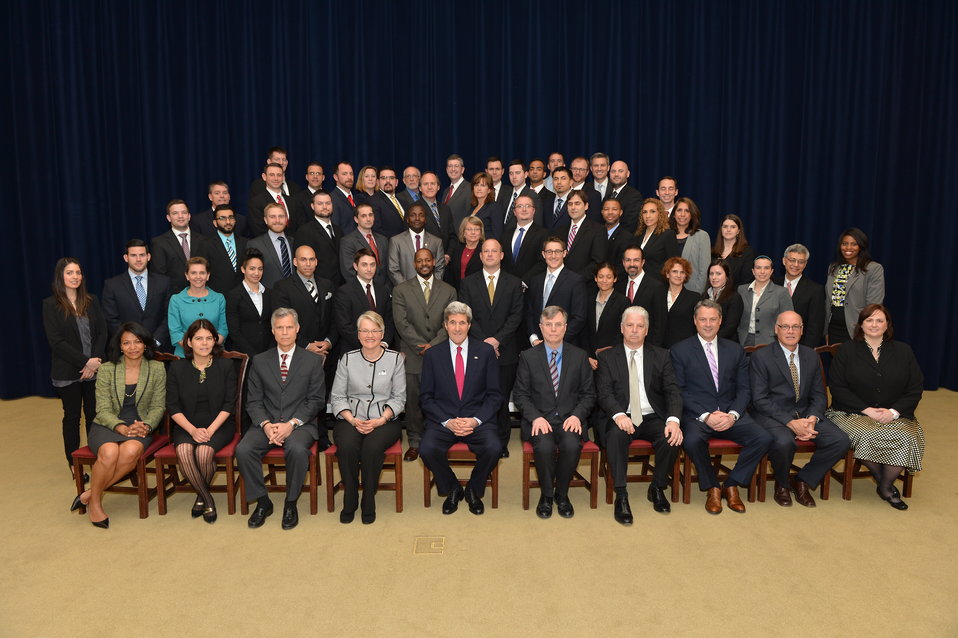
Secretary Kerry Swears in the 133rd Foreign Service Specialist Class

U.S. Secretary of State John Kerry swears in the 133rd Foreign Service Specialist class at the U.S. Department of State in Washington, DC on April 11, 2014.